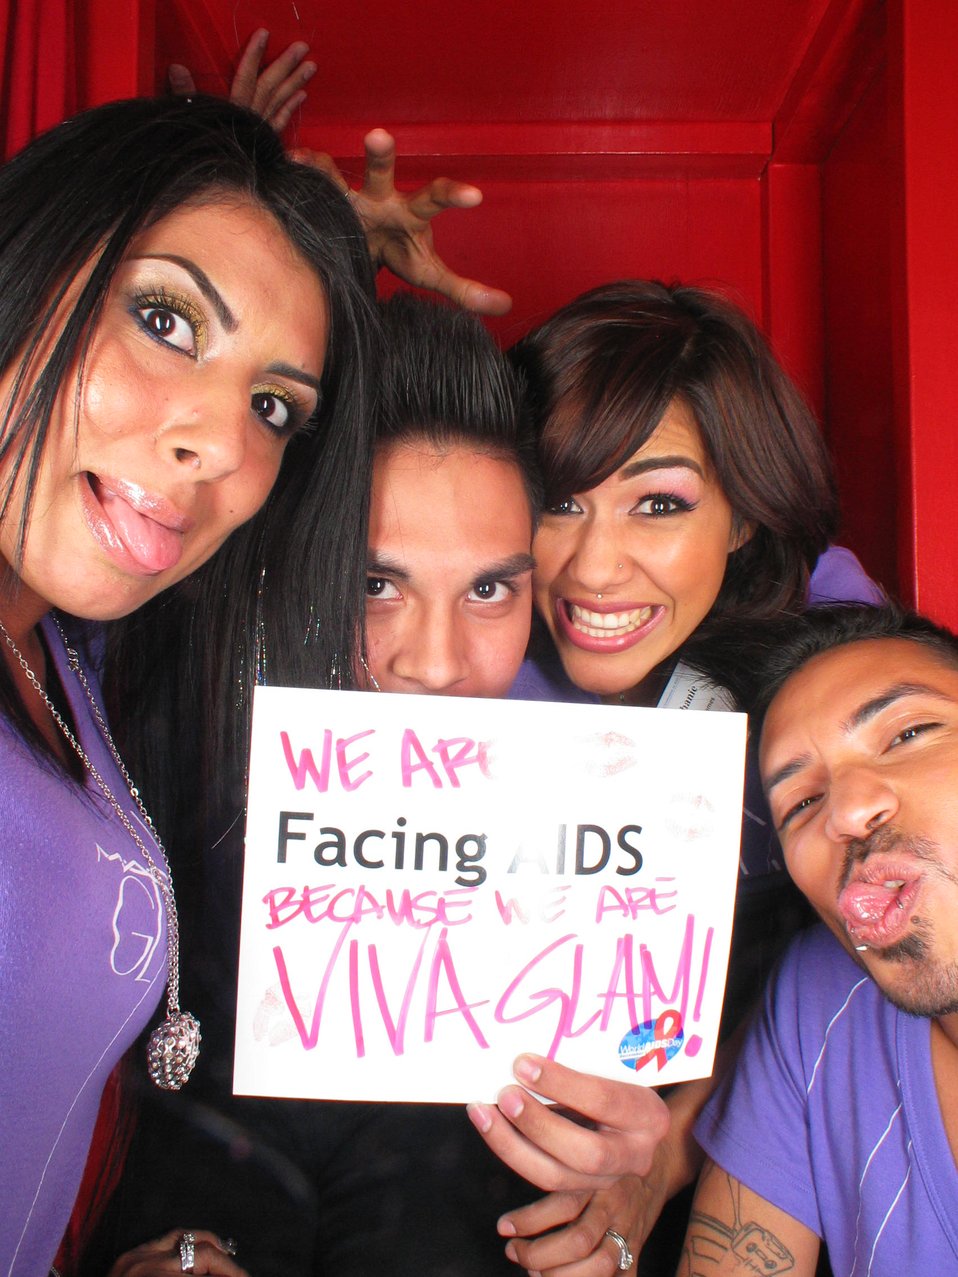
We are Facing AIDS because we are VIVA GLAM!